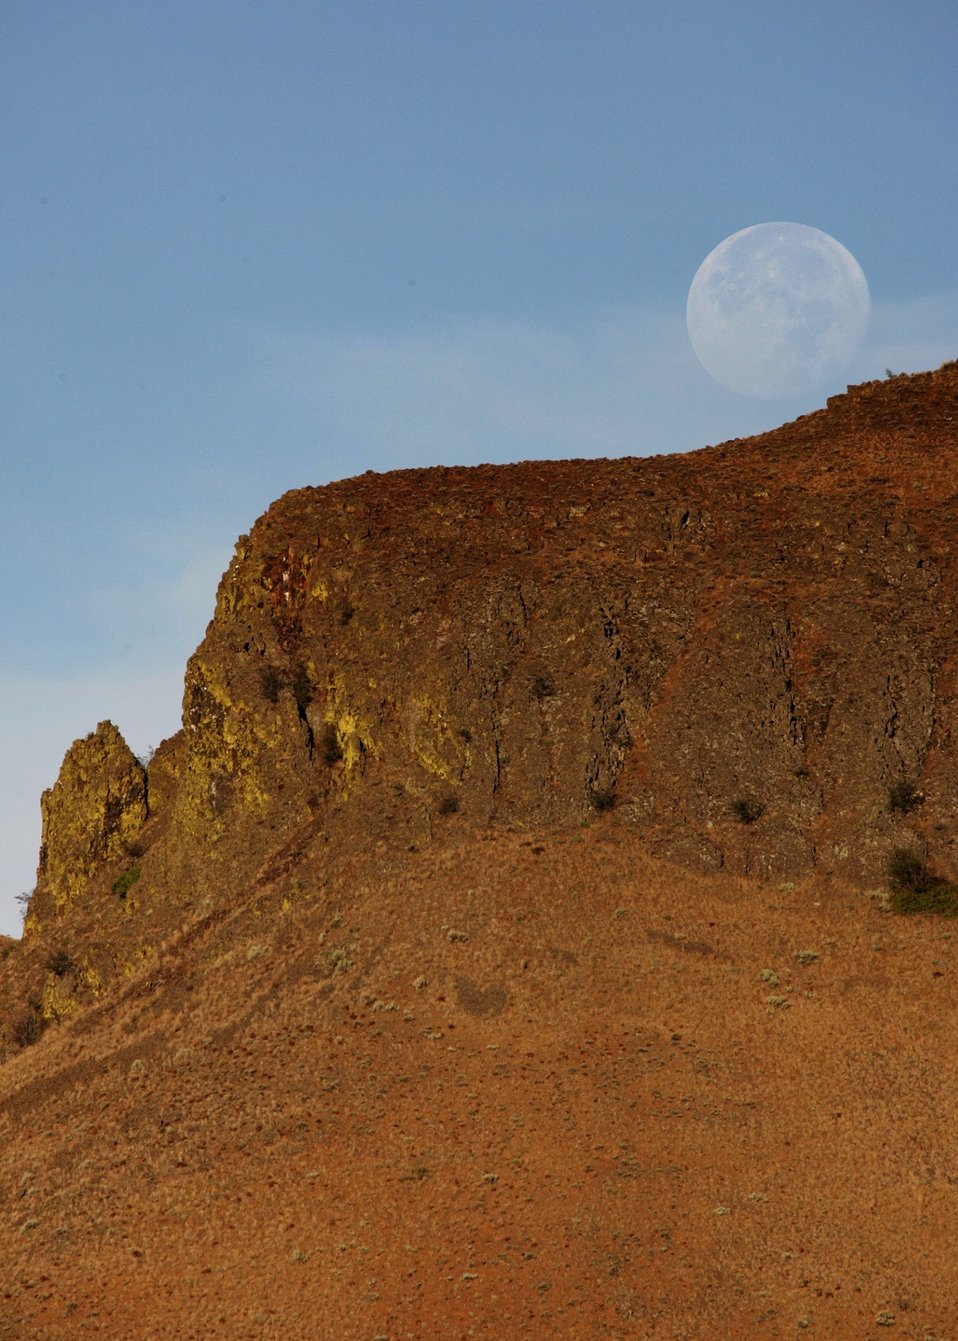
Moonset on the Snake River Backcountry Byway.